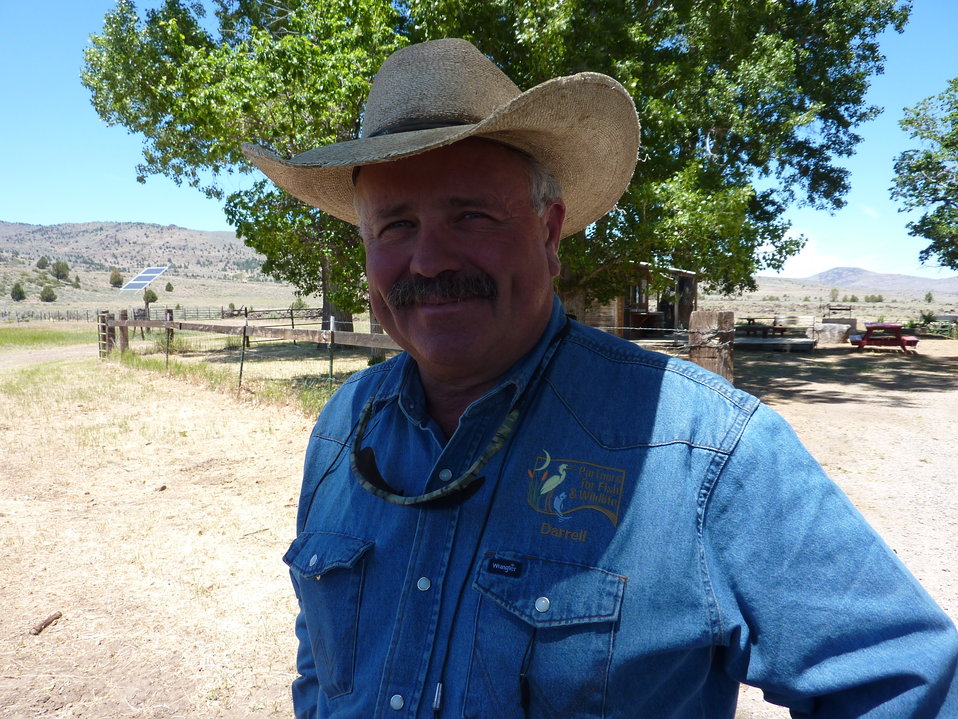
PFW Landowner Partner, Darrell Wood